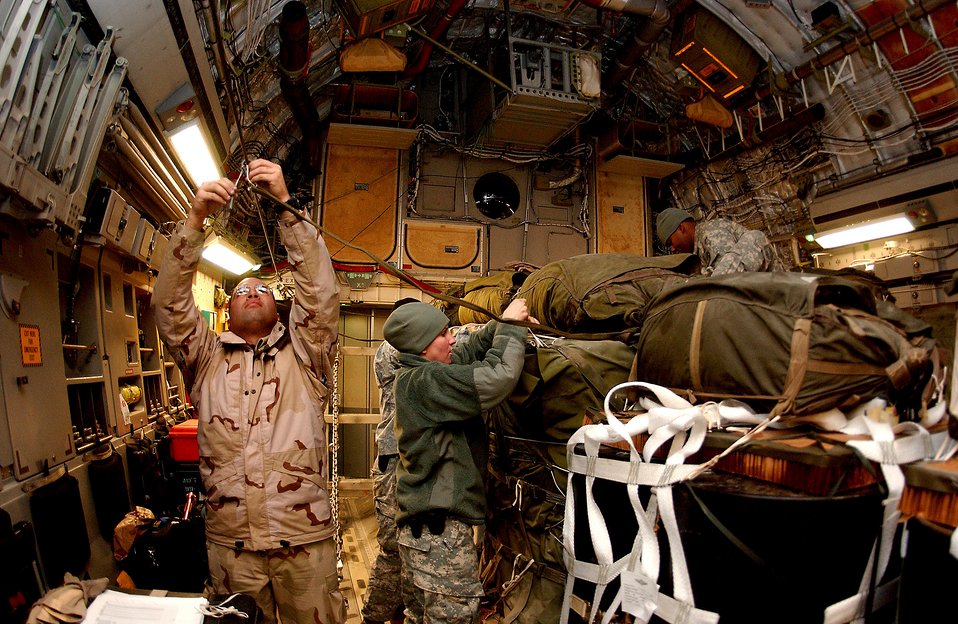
Dropping freedom

Staff Sgt. Jose Cruz (left) of the 816th Expeditionary Airlift Squadron works with Army Soldiers to tie the drop cords that will release parachutes attached to supply pallets Jan. 2 at Bagram Air Base, Afghanistan. The pallets will be airdropped from a C-17 Globemaster III to servicemembers at remote camps in Afghanistan.